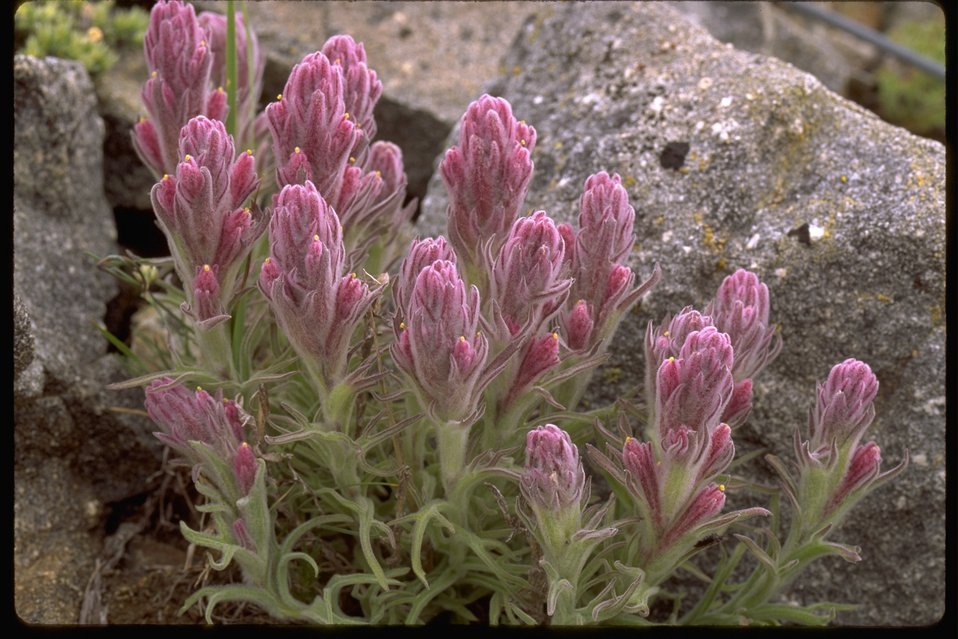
Indian Paintbrush found on Dutchman Peak.